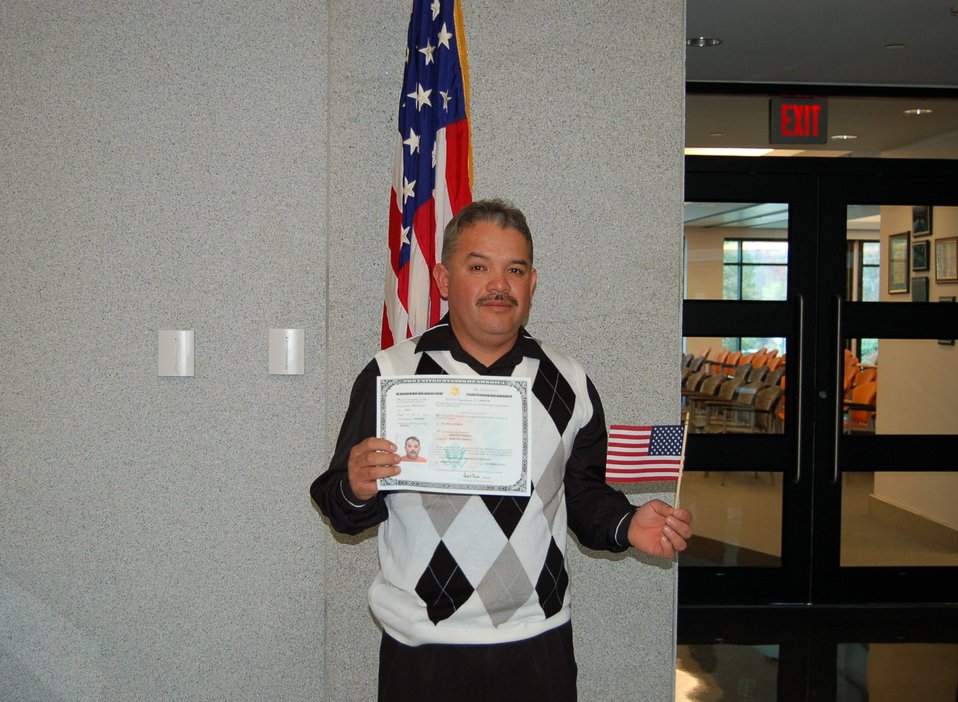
New Citizens